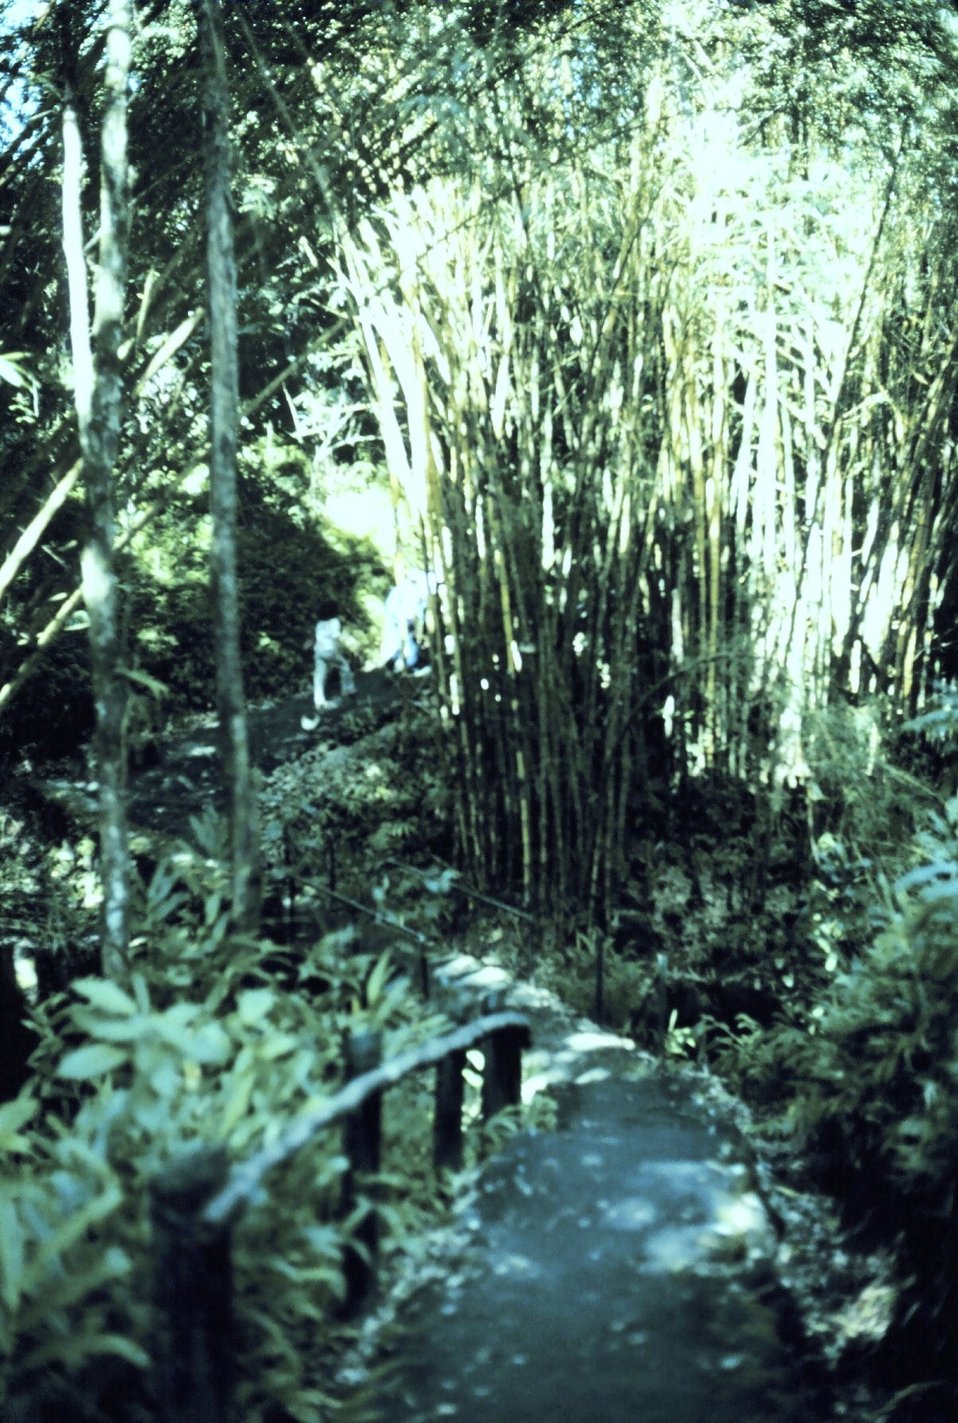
The trail to Akaka Falls - in a bamboo grove